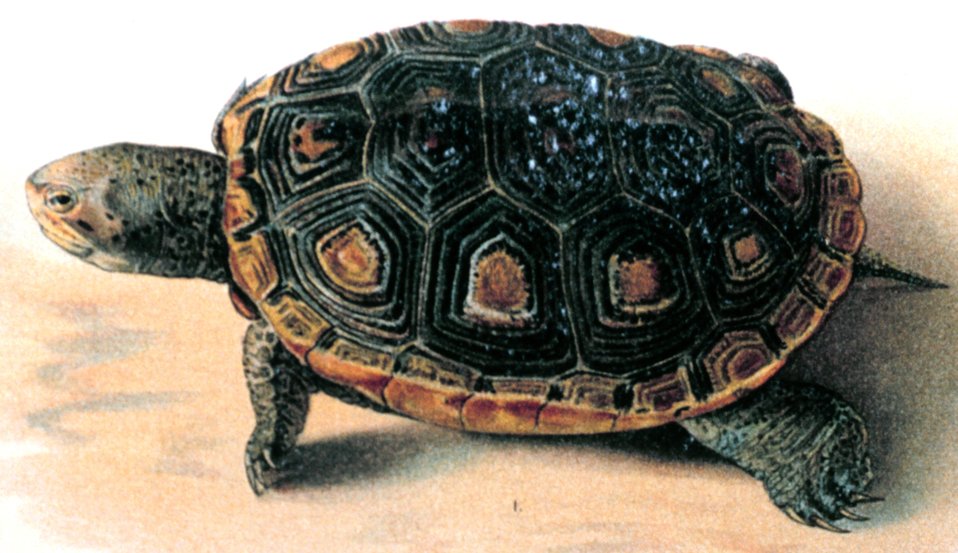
1. Malaclemmys macrospilota. In: 'A Revision of Malaclemmys, a Genus of Turtles', by William Perry Hay. P. 20, Plate XI (upper half).